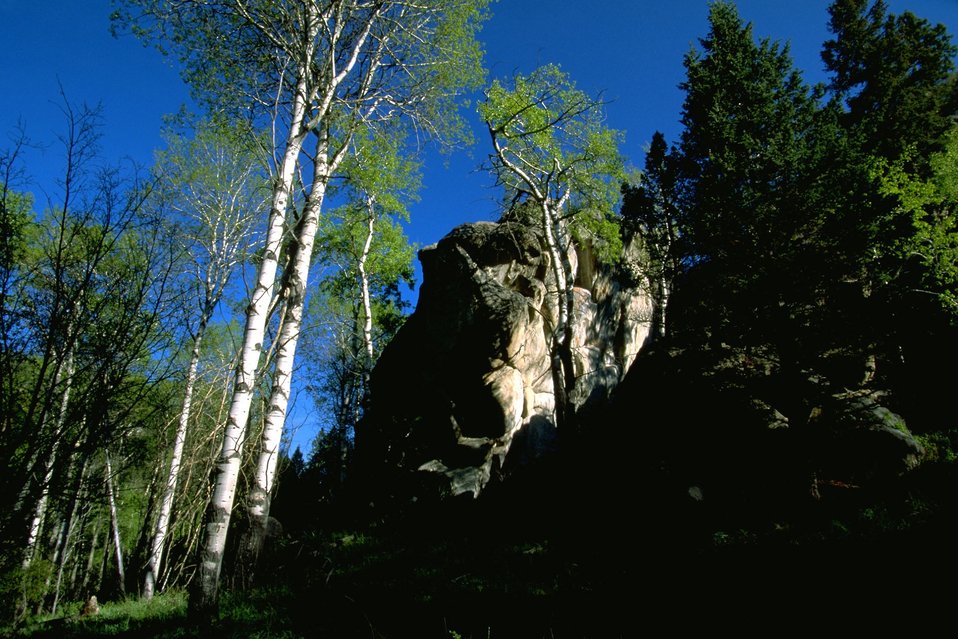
Aspen and Rocks